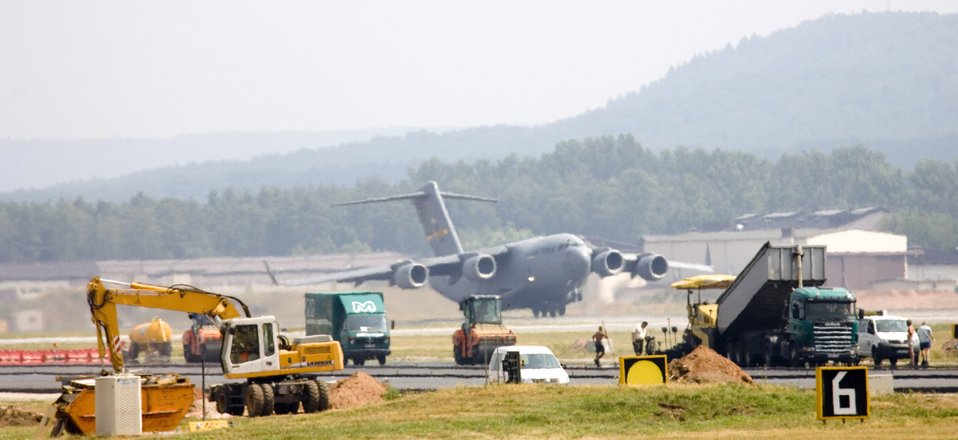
Ramstein's north airstrip receives makeover

A C-17 Globemaster III lifts off from the south runway as construction continues on the north runway at Ramstein Air Base, Germany, on July 28. The north runway will be extended 1,000 feet, allowing heavy air transports to take off fully loaded. The work began in mid-April and is one week ahead of the Jan. 1 completion date.